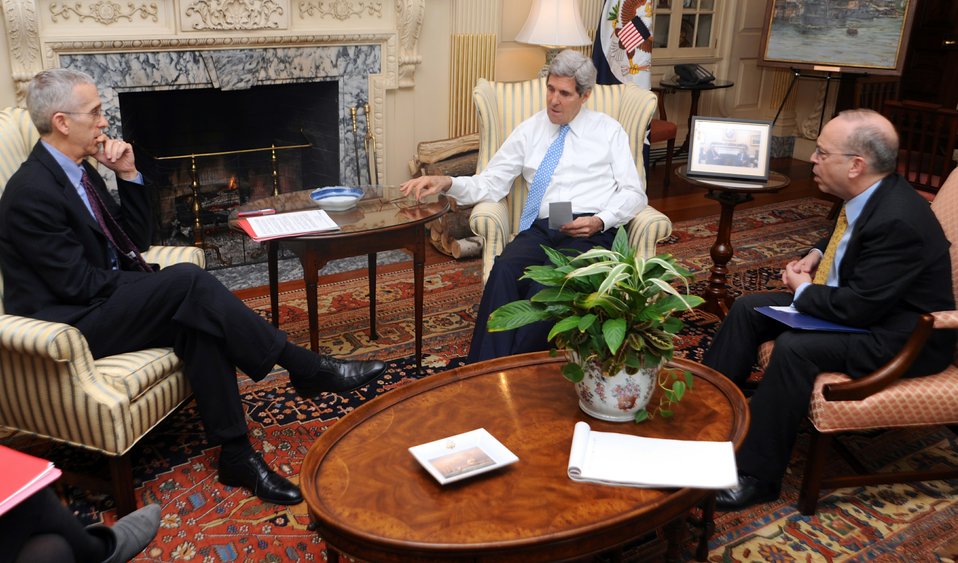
Secretary Kerry Meets With Special Envoy Stern and Assistant Secretary Russel

U.S. Secretary of State John Kerry meets with Special Envoy for Climate Change Todd Stern, left, and Assistant Secretary of State for East Asian and Pacific Affairs Daniel Russel at the U.S. Department of State in Washington, D.C., on February 4, 2014.